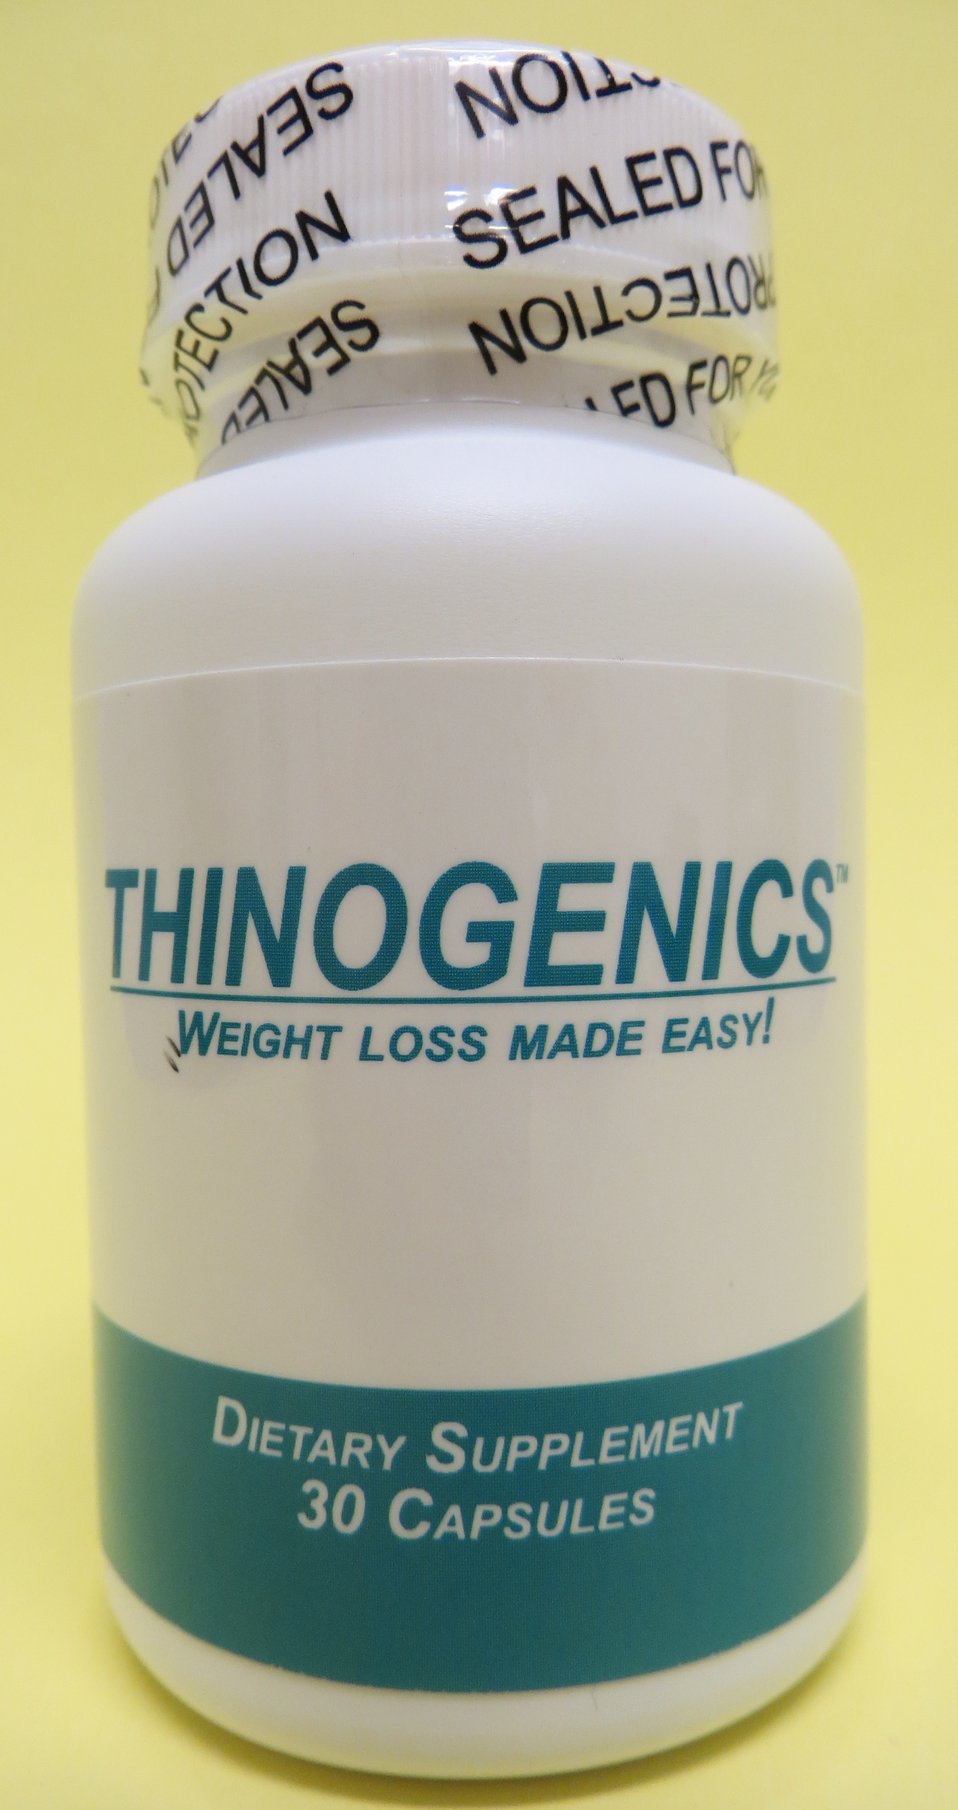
Thinogenics

January 28, 2014 - The FDA is advising consumers not to purchase or use Thinogenics, a product promoted and sold as a dietary supplement for weight loss. The product was found to contain undeclared sibutramine.